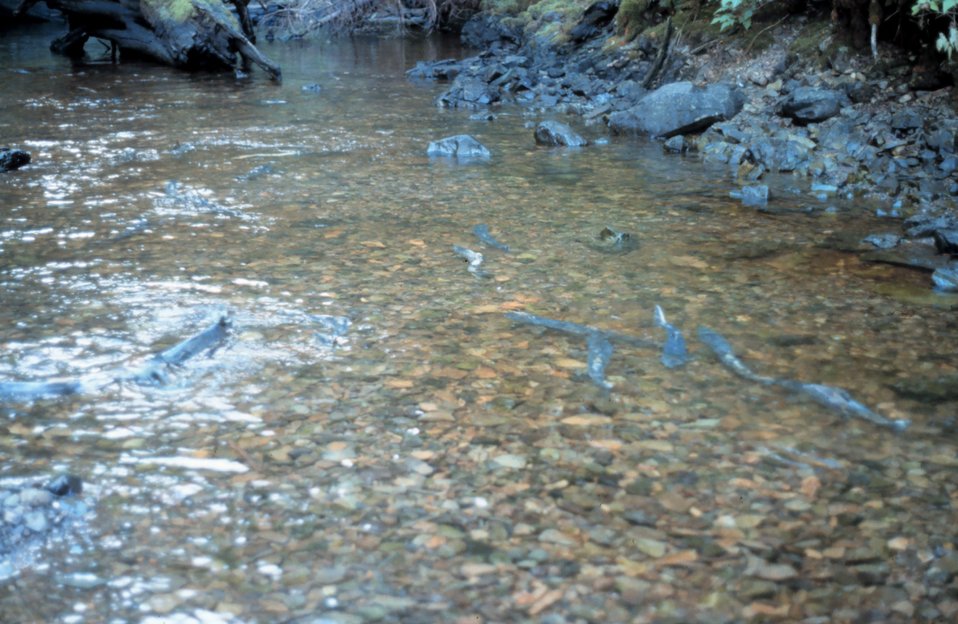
Spawning salmon